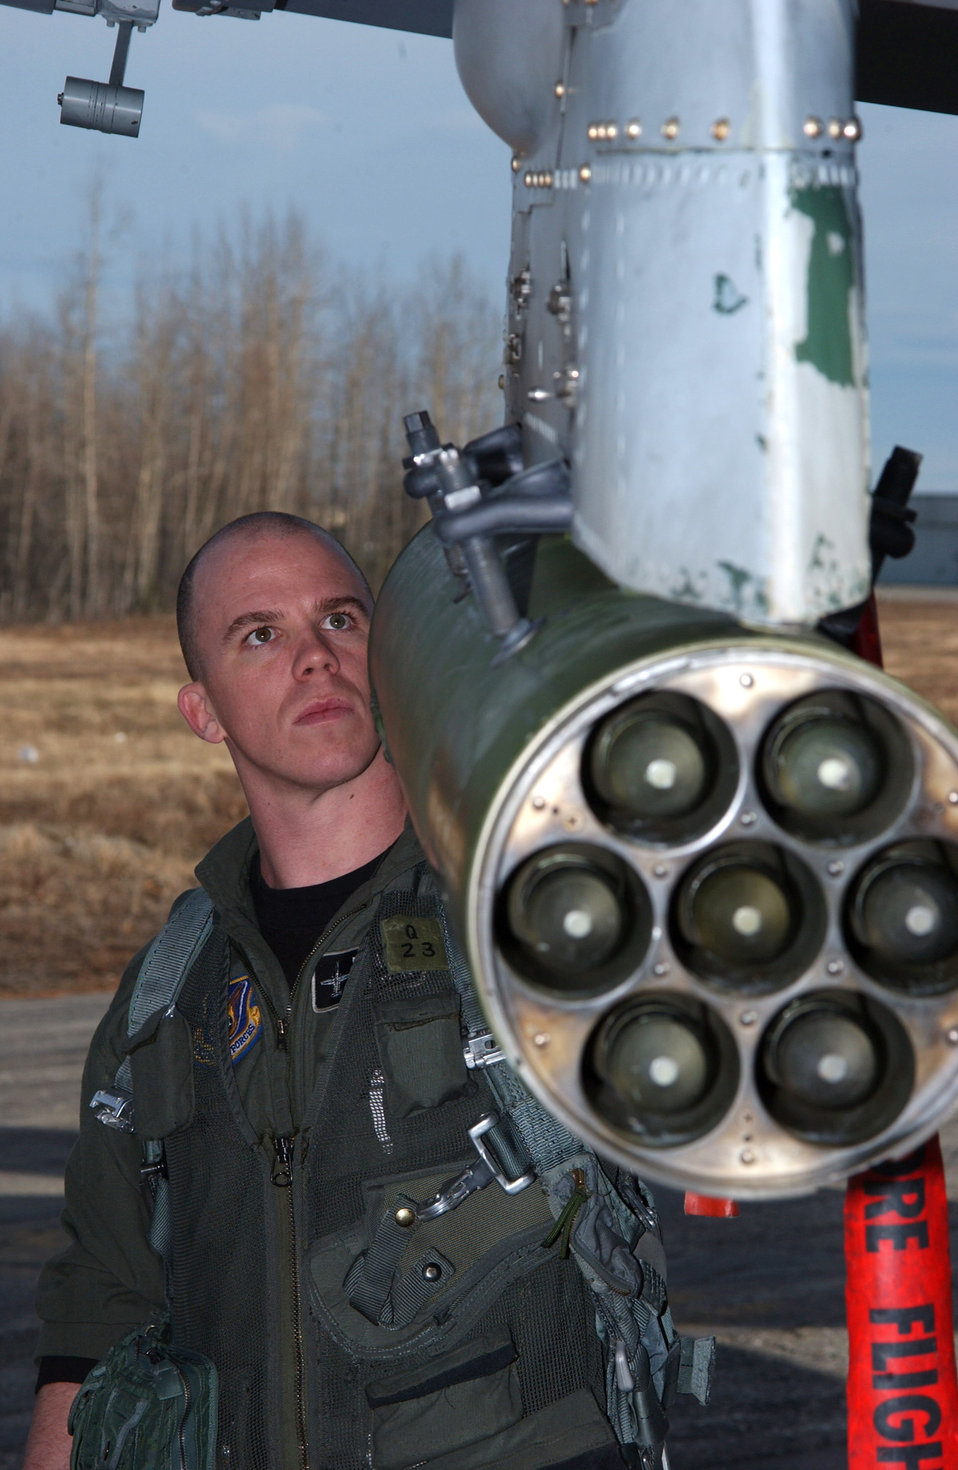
Alaska A-10s are goin' to Georgia

1st Lt. Dale Stark conducts a final walk-around inspection of all ordinances on an A-10 Thunderbolt II April 24 at Eielson Air Force Base, Alaska. Due to the Base Realignment and Closure list the A-10 Thunderbolt II is being relocated to Moody AFB, Ga. Lieutenant Stark is assigned to the 355th Fighter Squadron.